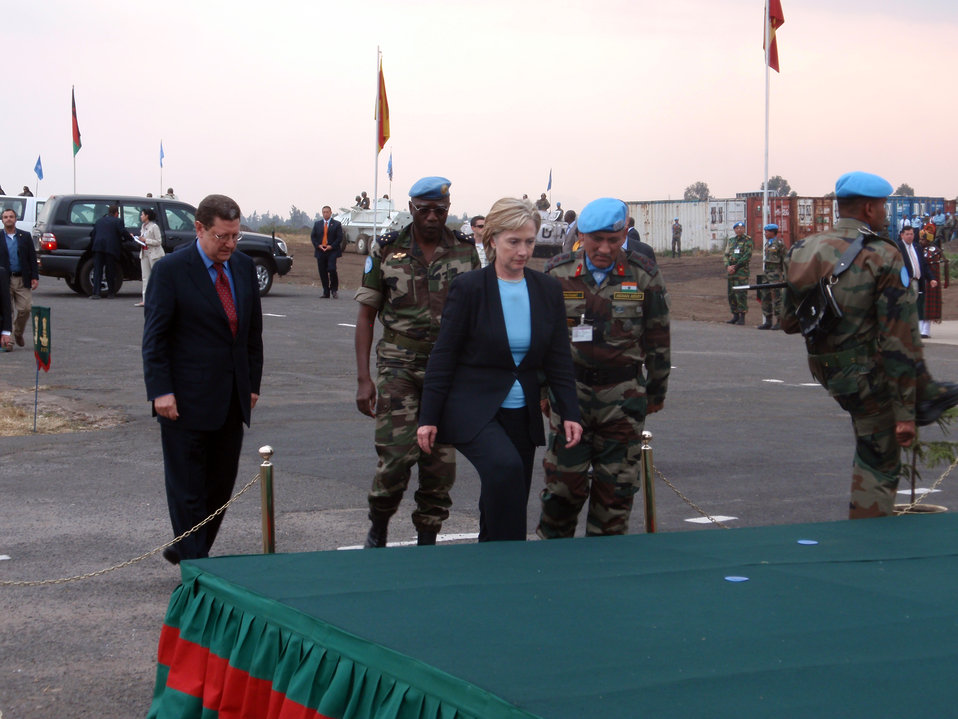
Secretary Clinton Visits MONUC in Goma

U.S. Secretary of State Hillary Rodham Clinton tours the United Nations Mission in the Democratic Republic of Congo (MONUC) air support operations base in Goma, Democratic Republic of Congo August 11, 2009.